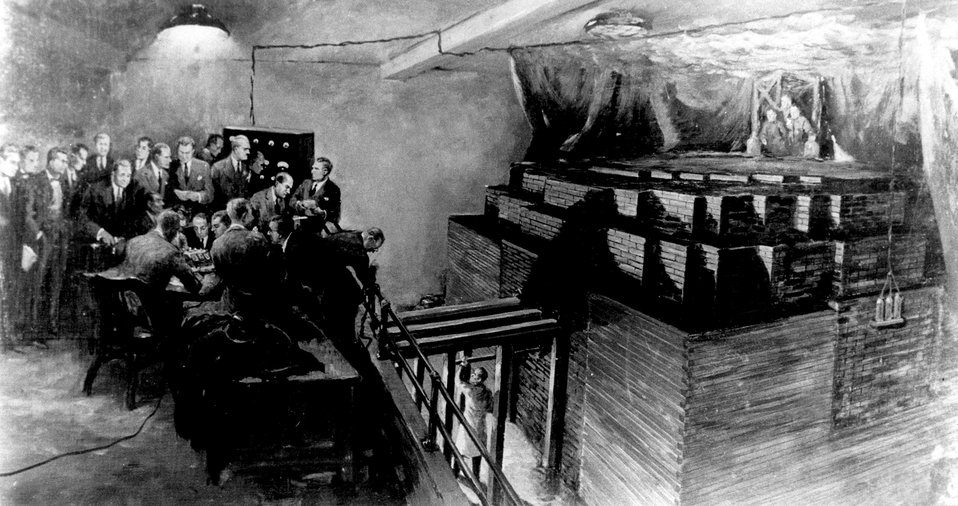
HD.5

The first control of the power of the atom was achieved at 3:35 p.m. on December 2, 1942, when Enrico Fermi and his team initiated the first self-sustaining nuclear chain reaction in a laboratory in the squash court built under the West Stands of Stagg Field at the University of Chicago..